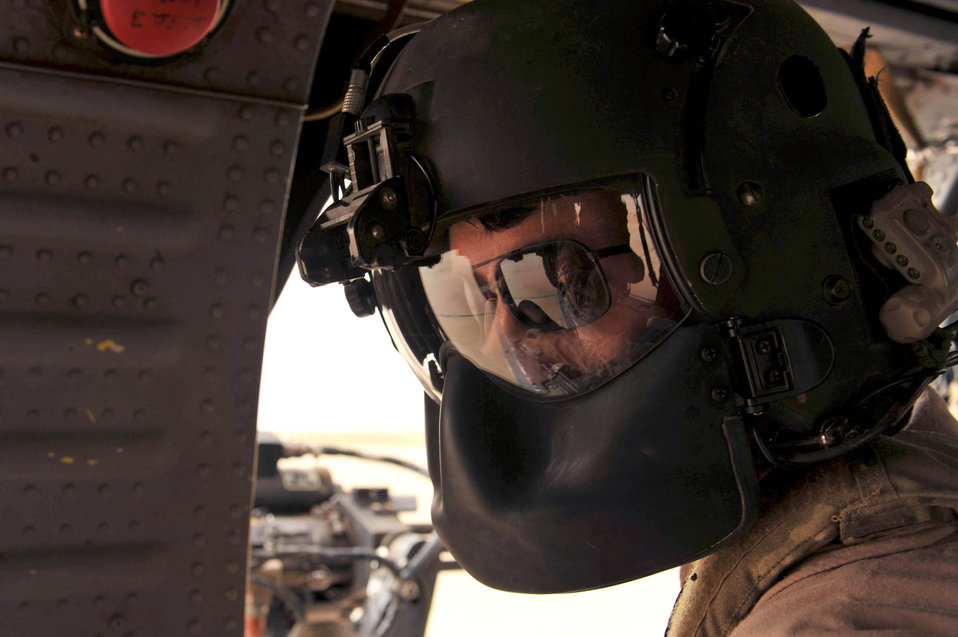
Personnel recovery team lives up to motto

Senior Airman Joseph Arriza checks the cargo compartment of an HH-60G Pave Hawk during a training flight May 15, 2010, near Joint Base Balad, Iraq. Airman Arriza is an aerial gunner assigned to the 64th Expeditionary Rescue Squadron.